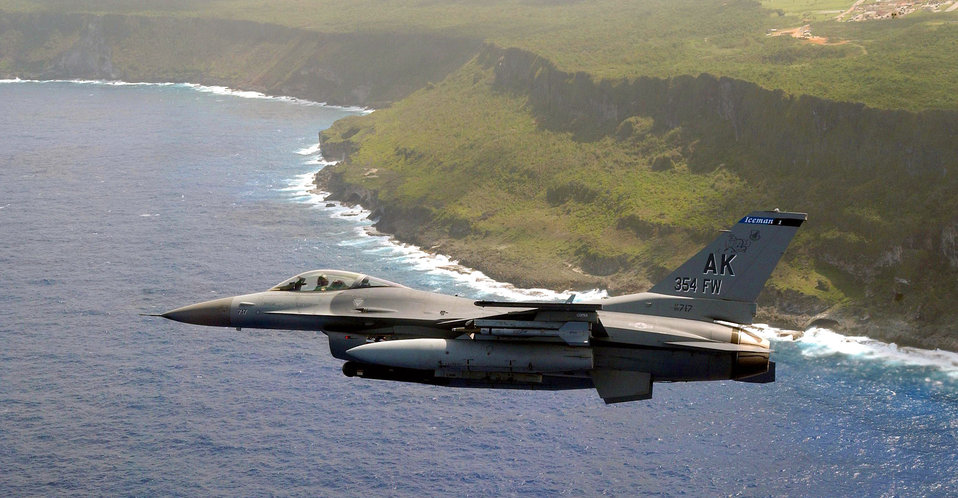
Cruising

ANDERSEN AIR FORCE BASE, GUAM -- An F-16 Fighting Falcon assigned to the 18th Fighter Squadron, Eielson AFB, Alaska makes its appoach to Andersen AFB, Guam. The aircraft is participating in Exercise Tandem Thrust '03, conducted in the Mariana Islands. The exercise is a joint endeavor to include forces from the U.S., Canada, and Australia.